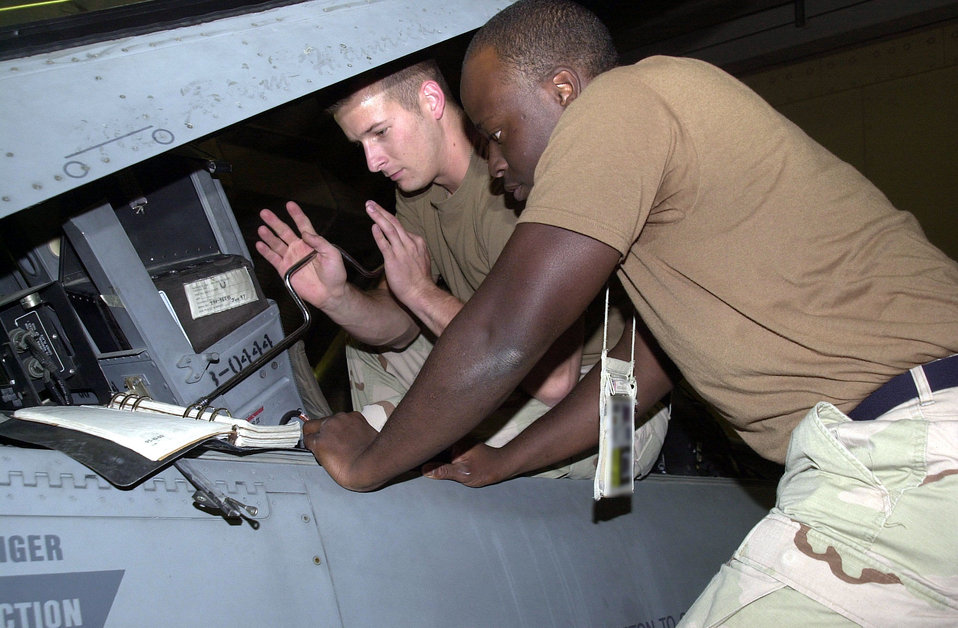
When all else fails, egress prevails

SOUTHWEST ASIA -- Airman 1st Class Jason Bowers (left) secures the seat rails of an ejection seat in an F-16 Fighting Falcon here while Airman 1st Class Anthony Allen calls out the steps in a technical order checklist. Egress system maintainers always work in pairs, with one person performing the work while the other reads the appropriate technical orders and checklists out loud. Both airmen are egress systems apprentices assigned to the 379th Expeditionary Maintenance Squadron.